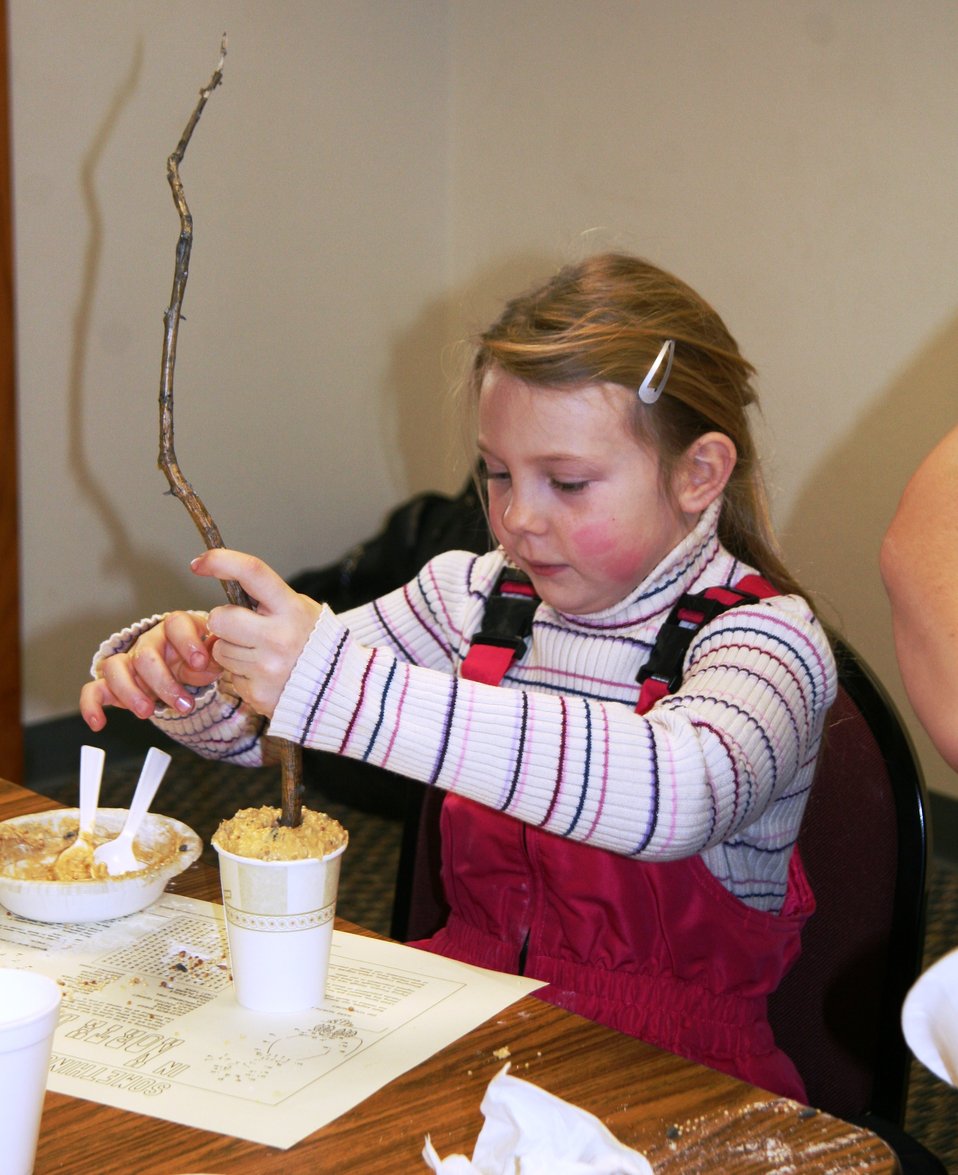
Make Bird Treats at Home!

Bird treats were made with everyday cooking ingredients anyone can find at home - shortening, peanut butter, cornmeal, flour and birdseed.